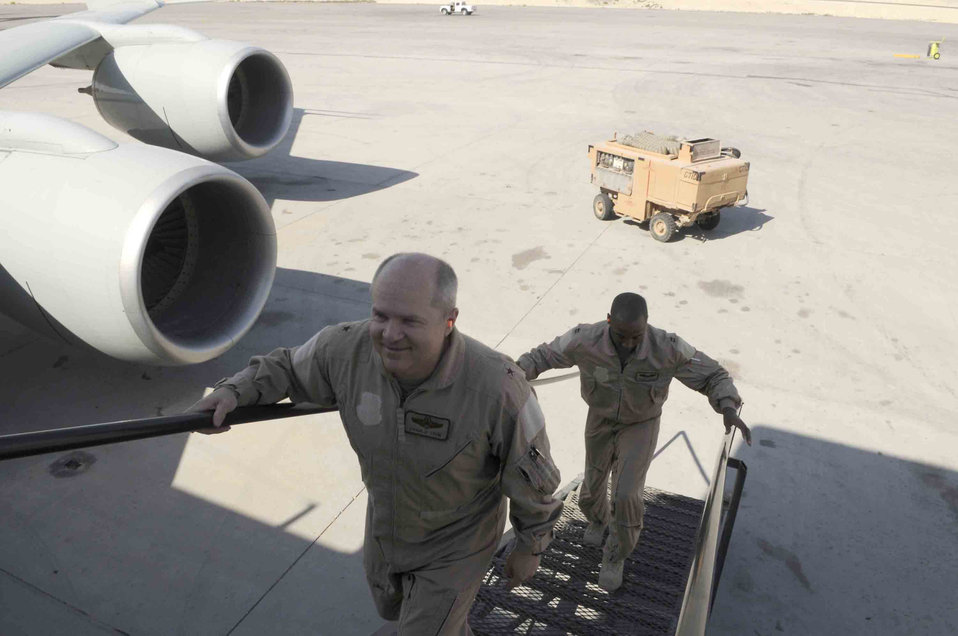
RC-135 surpasses 50,000 flying-hour mark

Brig. Gen. Charles W. Lyon boards an aircraft March 12 at a Southwest Asia air base. The general and Capt. Kareem Haskett of the 379th Expeditionary Reconnaissance Squadron piloted an RC-135 Rivet Joint that logged 50,000 hours flight time. General Lyon is the 379th Air Expeditionary Wing commander.